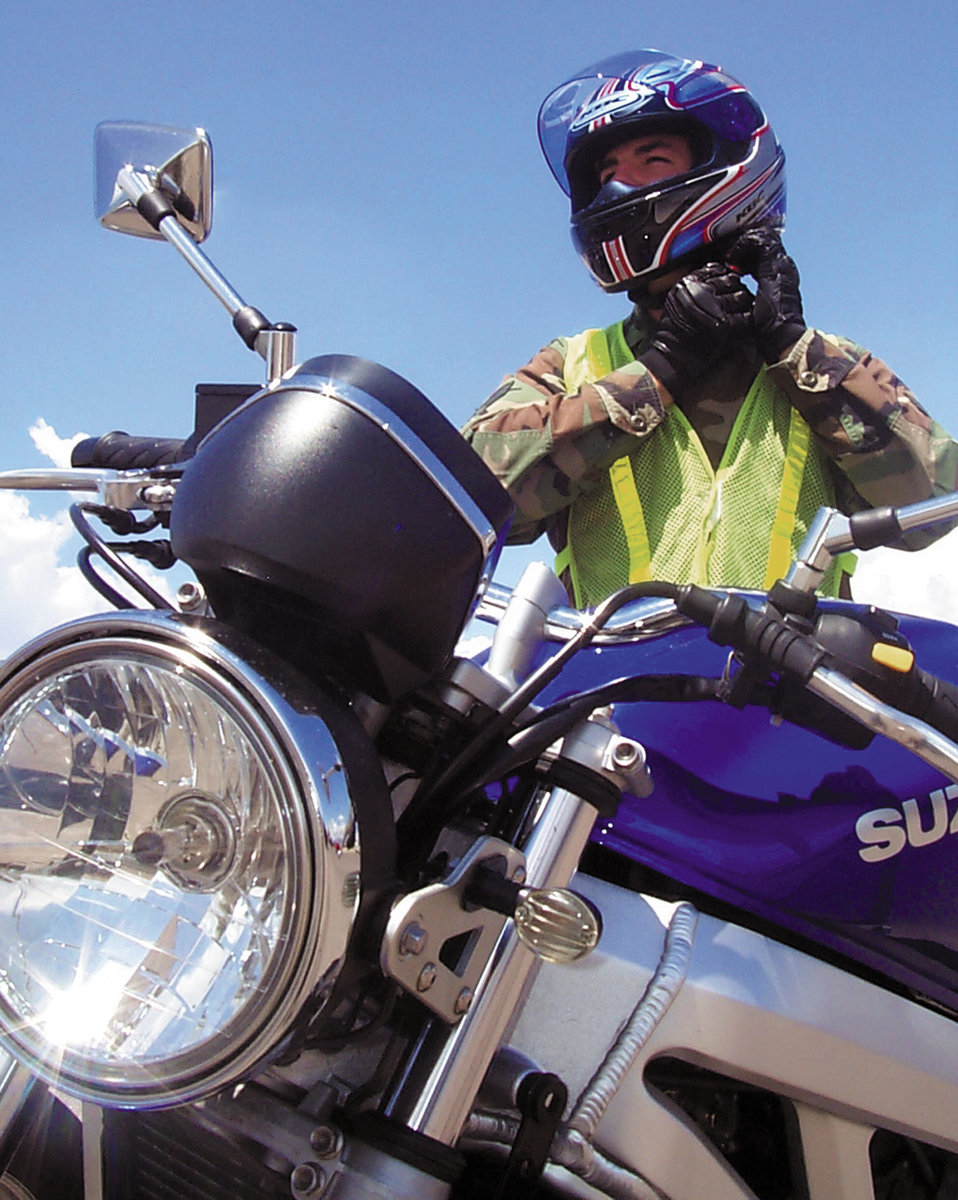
Motorcycle safety

DAVIS-MONTHAN AIR FORCE BASE, Ariz. -- Senior Airman Timothy Thrall suits up in the required safety gear before heading off base for a ride on his motorcycle. Airman Thrall is assigned to the 355th Component Maintenance Squadron and is one of many motorcycle riders on base.